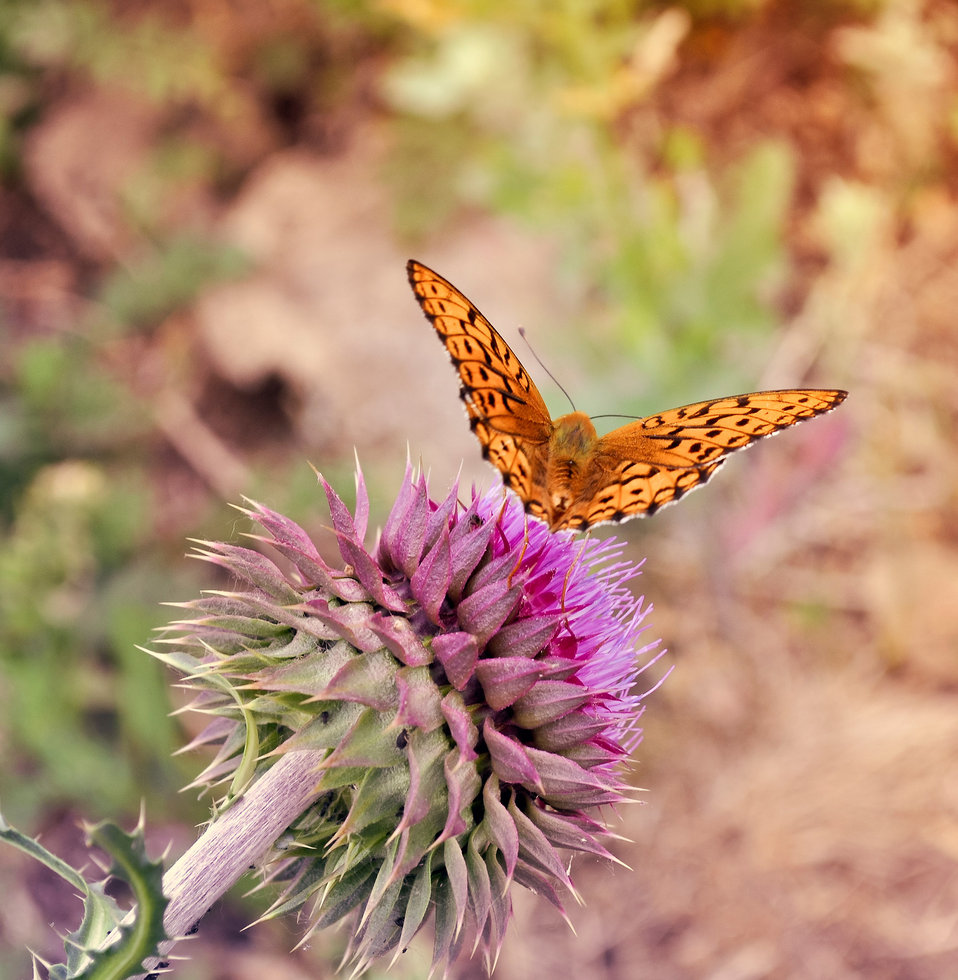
Butterfly

Orange butterfly on a flower.